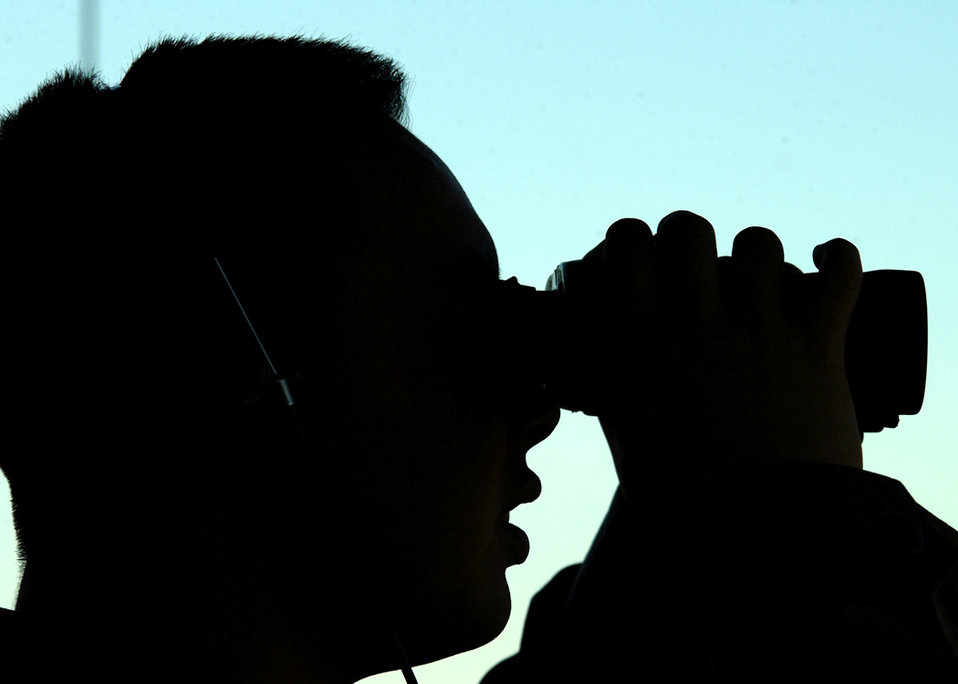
Thunderous combat

EIELSON AIR FORCE BASE, Alaska -- Airman 1st Class Kim examines aircraft here on Oct. 7 from the tower before the start of exercise Cope Thunder 06-1. The two-week Alaskan exercise is the largest air combat training exercise, involving more than 1,000 active-duty and Air National Guard Airmen and 87 aircraft. Airman Kim is assigned to the 354th Operations Group.